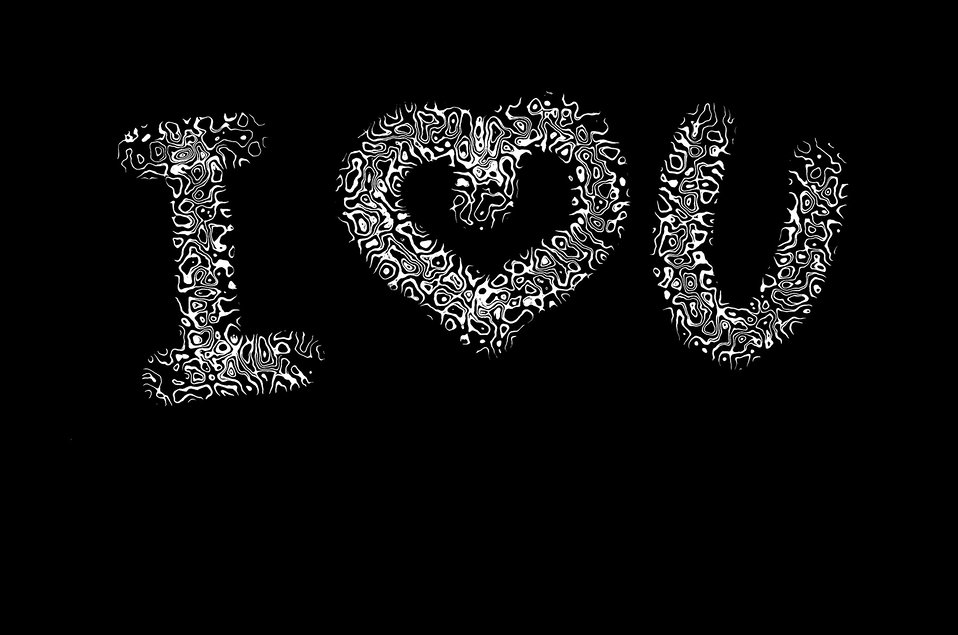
Heart of love.